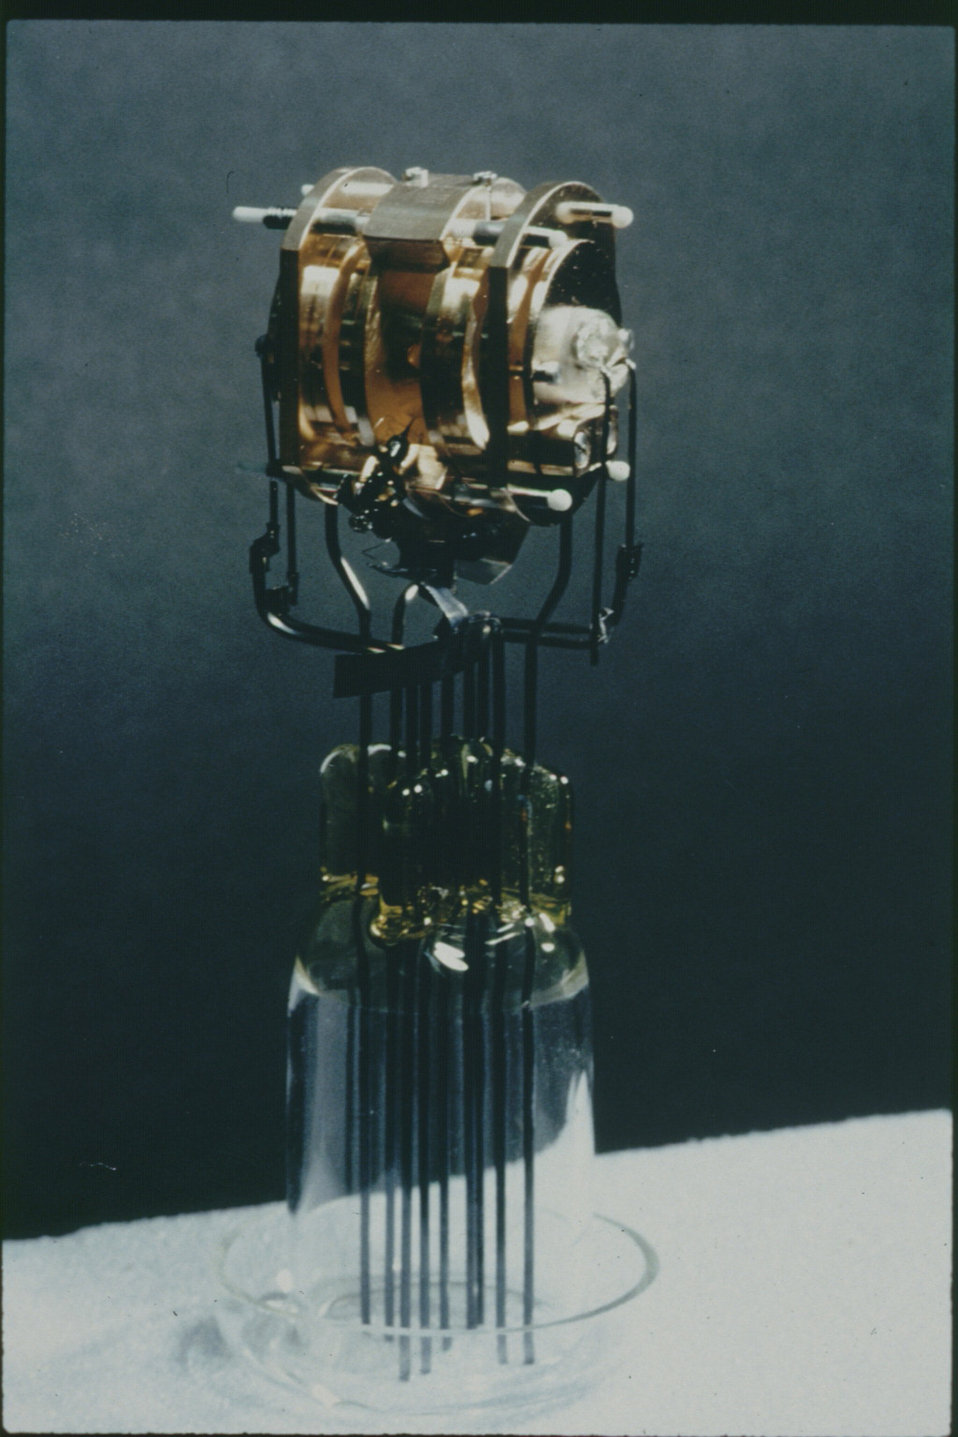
Ion trap used in first laser cooling experiment.